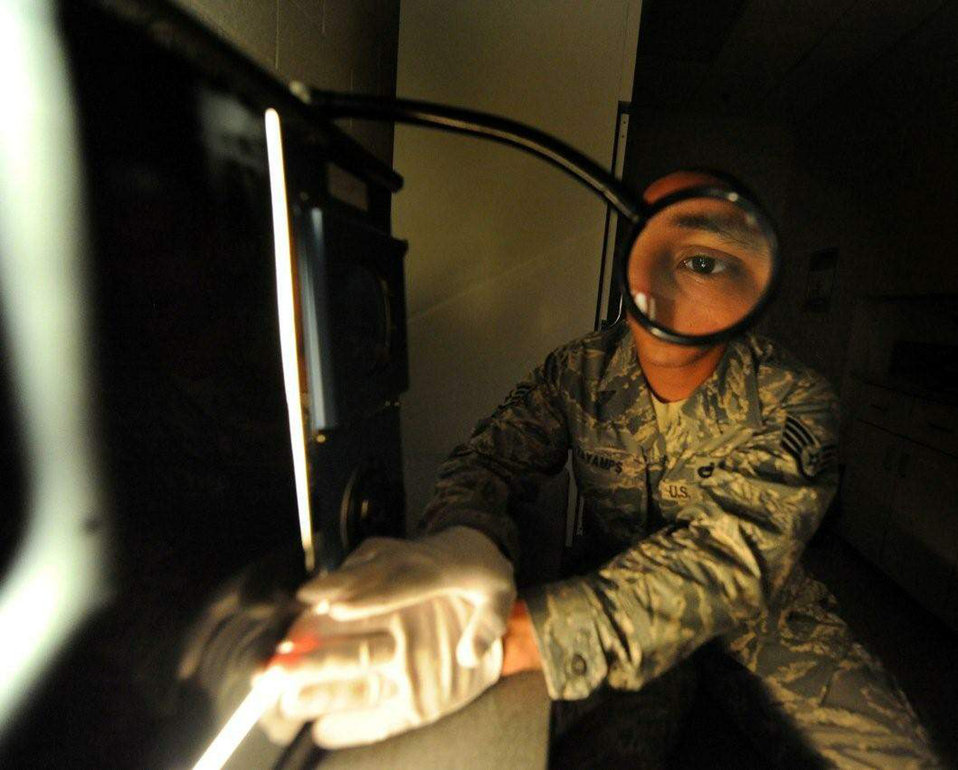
Photo essay: Taking a closer look

Staff Sgt. Kenny Payamps inspects radiography film of a carbon fiber composite panel for foreign objects May 27 at Charleston Air Force Base, S.C. The nondestructive inspection section is responsible for ensuring structural integrity on both weapons and nonweapons systems. Sergeant Payamps is a nondestructive craftsman with the 437th Maintenance Squadron.